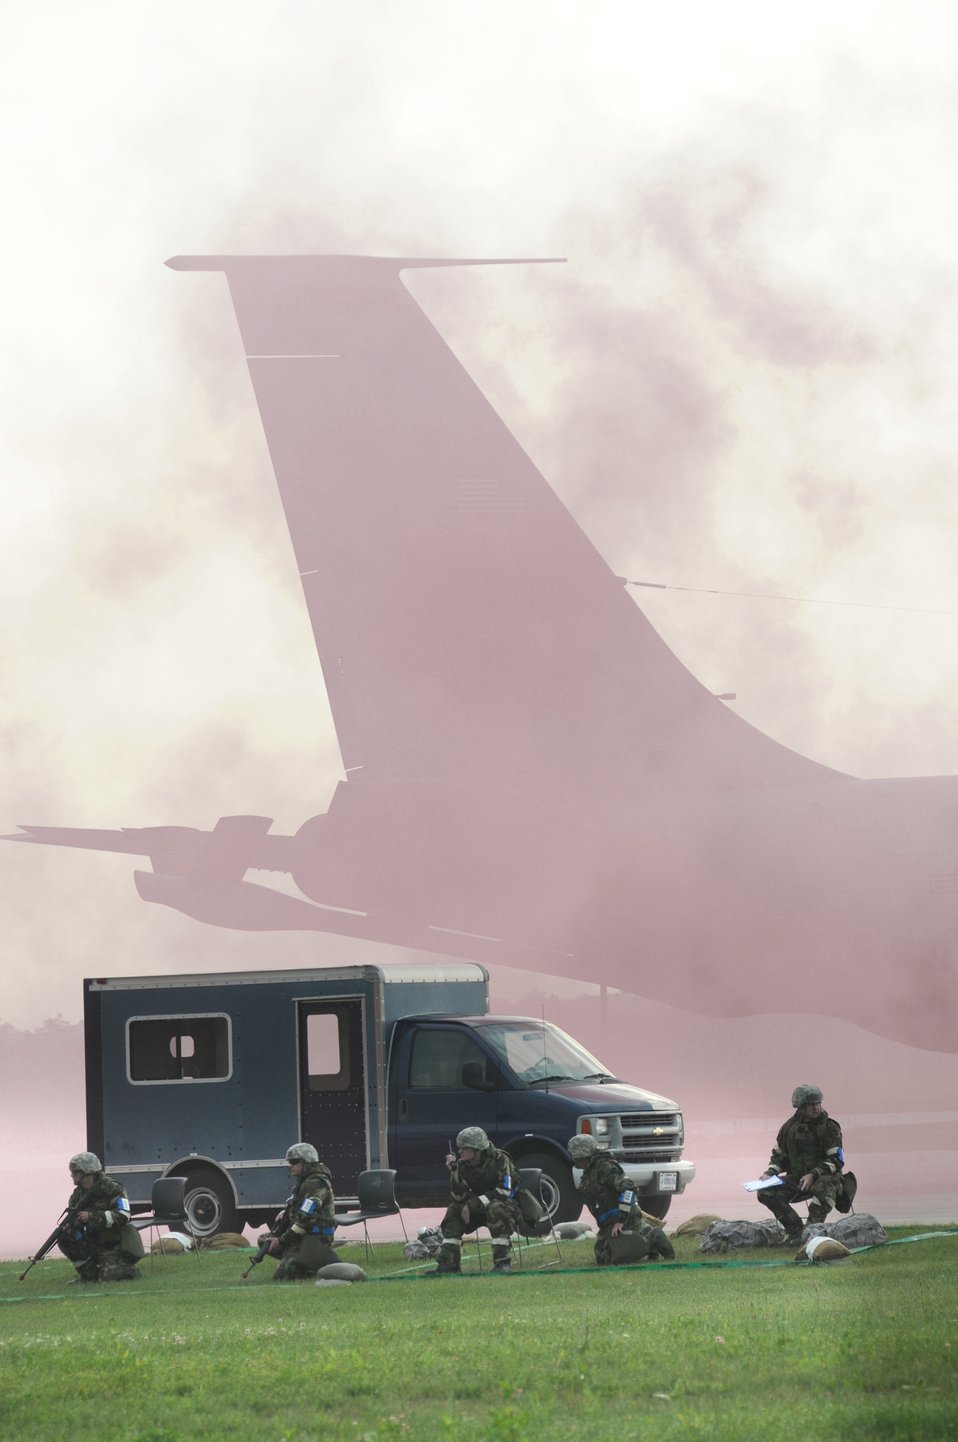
Primed for evaluation

Members of various Michigan Reserve and Air National Guard units perform tasks during a